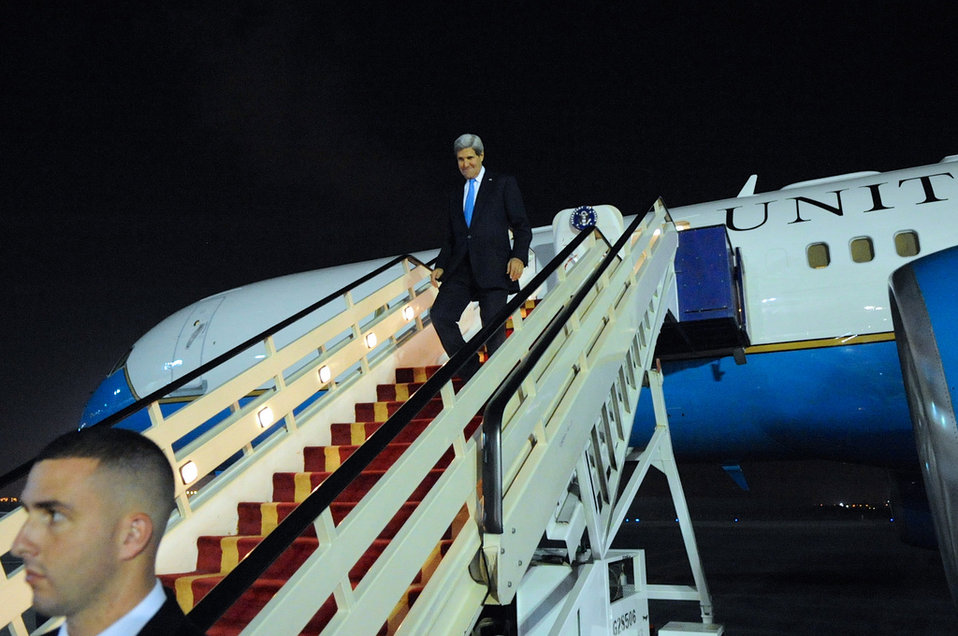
Secretary Kerry Arrives in Saudi Arabia

U.S. Secretary of State John Kerry arrives in Riyadh, Saudi Arabia, for a meeting with King Abdullah on November 3, 2013.